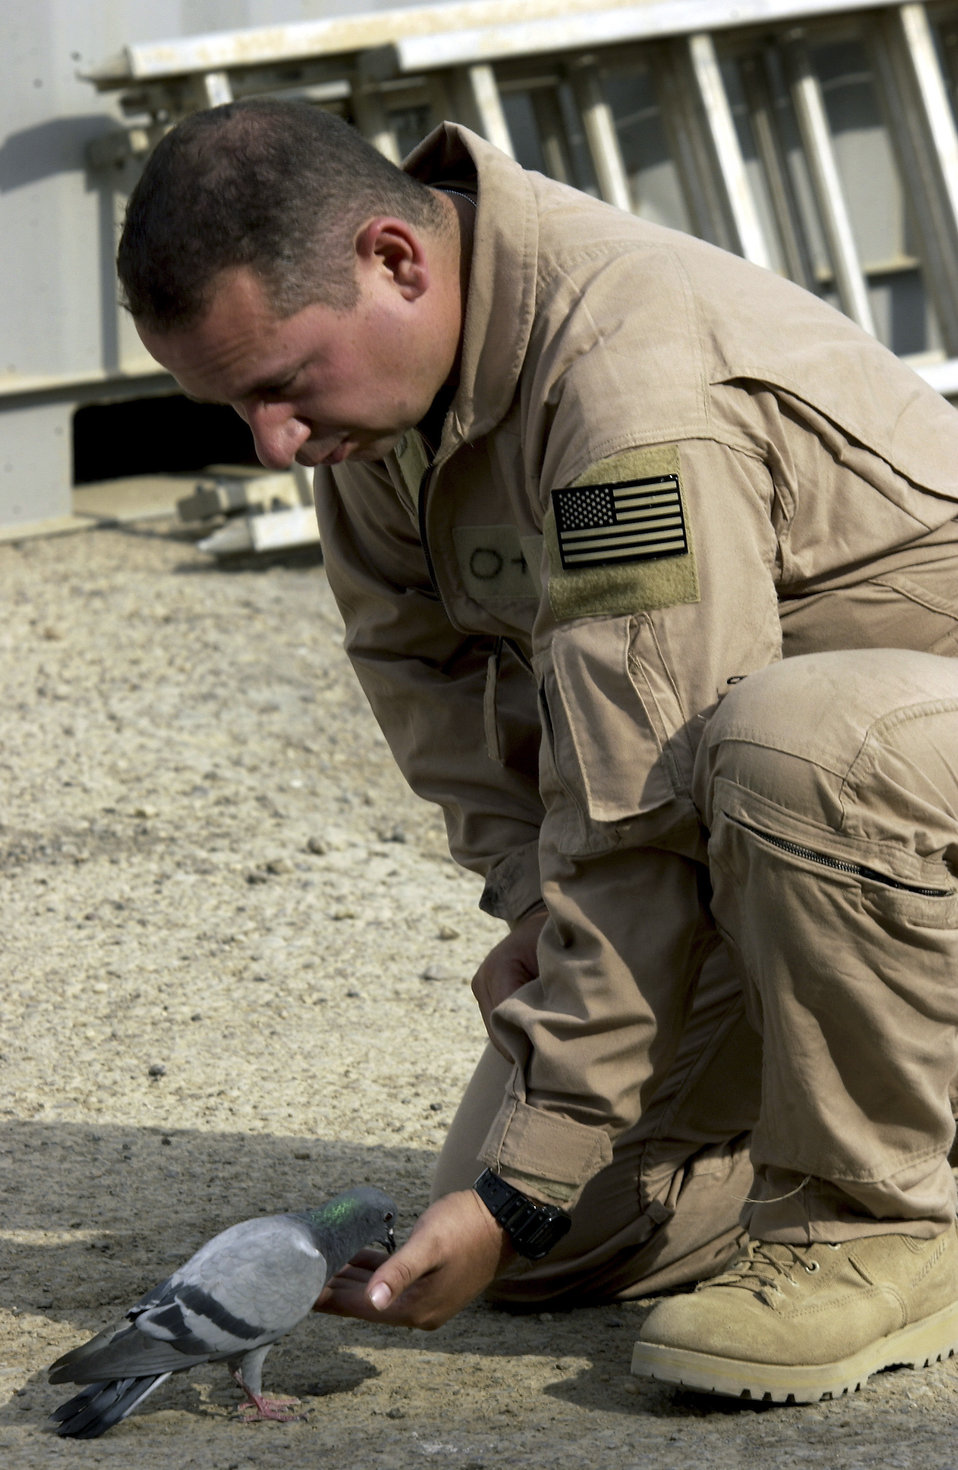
Bird food

BAGHDAD INTERNATIONAL AIRPORT, Iraq -- Staff Sgt. Steve Sirois, an HH-60 Pave Hawk flight engineer, feeds Bird, a pigeon his unit has been caring for since they deployed here. Bird was rescued and nursed back to health by airmen of the 301st Expeditionary Rescue Squadron. Sirois and other 101st ERQS airmen began caring for and feeding Bird when they replaced the 301st.